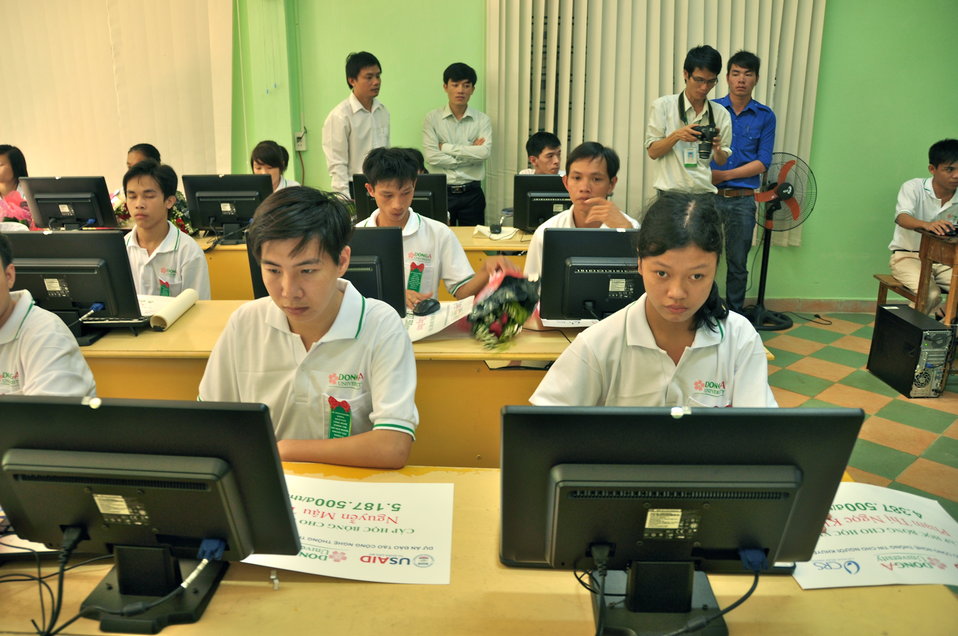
New class of students starts at Dong A Univeristiy with support from USAID and CRS

Photo: @USAIDVietnam
December 3, 2012